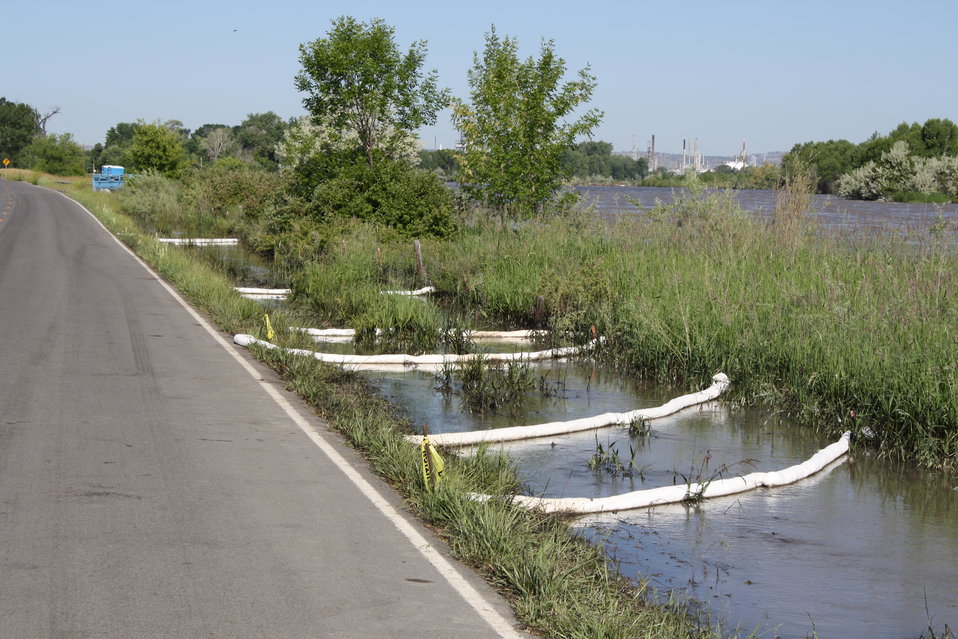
Booms Capturing Recoverable Oil

Booms placed along the Yellowstone River to capture spilled oil. Image taken July 9, 2011.